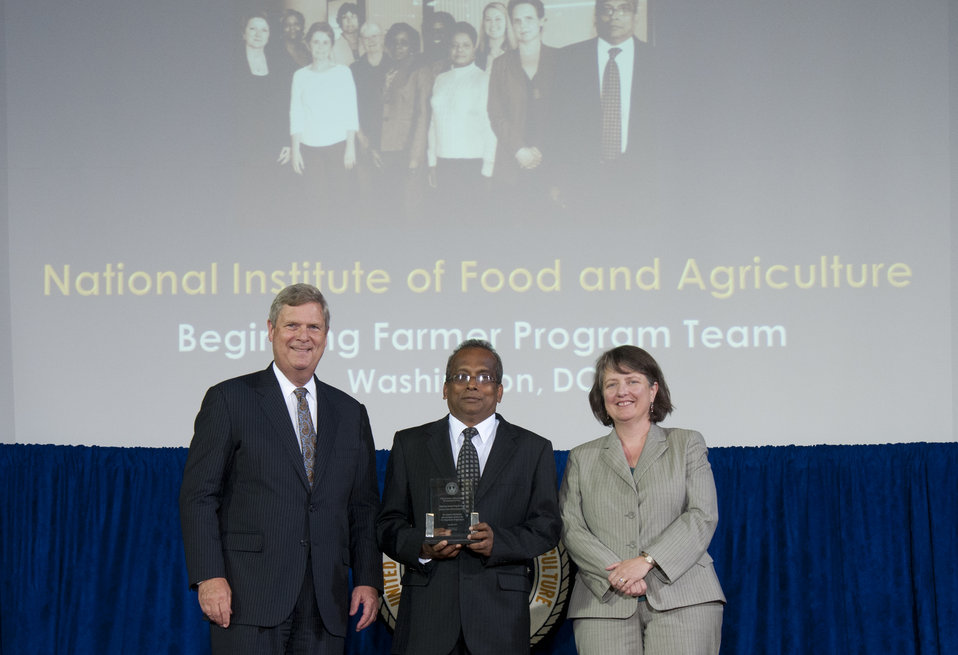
Agriculture Secretary Tom Vilsack and Agriculture Deputy Secretary Kathleen Merrigan present the Secretary’s Honor Award to Beginning Farmer Program Team National Institute of Food and Agriculture (NIFA) group leader Sivapathasunderam Sureshwaran at the U.S. Department of Agriculture (USDA) 64th Annual Honor Awards Ceremony in Washington, D.C. on Wednesday, Sept. 12, 2012. Beginning Farmer Program Team provided outreach and collaboration with new stakeholder groups, which has enhanced access to USDA programs and the sustainability of farmers, especially socially disadvantaged and limited resource farmers and farm workers.